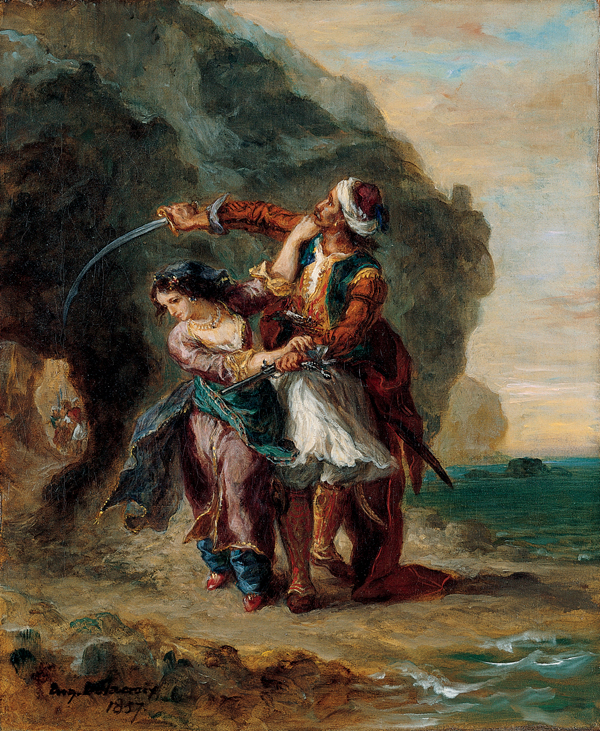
'Selim and Zuleika', oil on canvas painting by Eug√®ne Delacroix